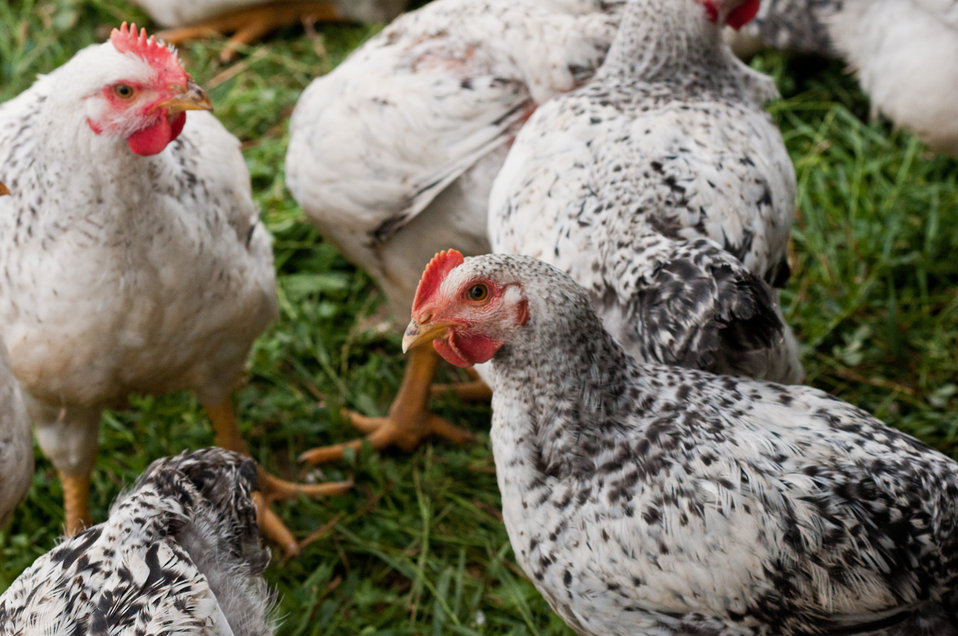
Broiler chickens graze on organic pastures and live in pens that protect them from predators, direct sun light, and wind at Nick’s Organic Farm, owned by Nick Maravell in Adamstown, MD on Friday, July 12, 2013. The enclosures are light enough to be moved by hand, each day, one consecutive section at a time. This allows the pasture to easily recover from the grazing. The farm produces Black Angus beef, chicken, turkey, eggs, hay, soybeans, corn, alfalfa, orchard grass, rye; and other crops. The cattle are100% grass-fed receiving certified organic pasture, certified organic hay (in winter), water and mineral salts mixed with sea kelp. The cattle are not fed hormones, antibiotics or animal products. Poultry feed from grain is ground from organic grain. The poultry also graze on organic pastures. The farm has conducted on-farm research with federal, state and non-profit agencies to refine organic practices. An organization such as the U.S. Department of Agriculture (USDA) Agricultural Research Service (ARS) center in Beltsville has been able to conduct research to improve organic crops and to breed and manage the cattle so that they have.